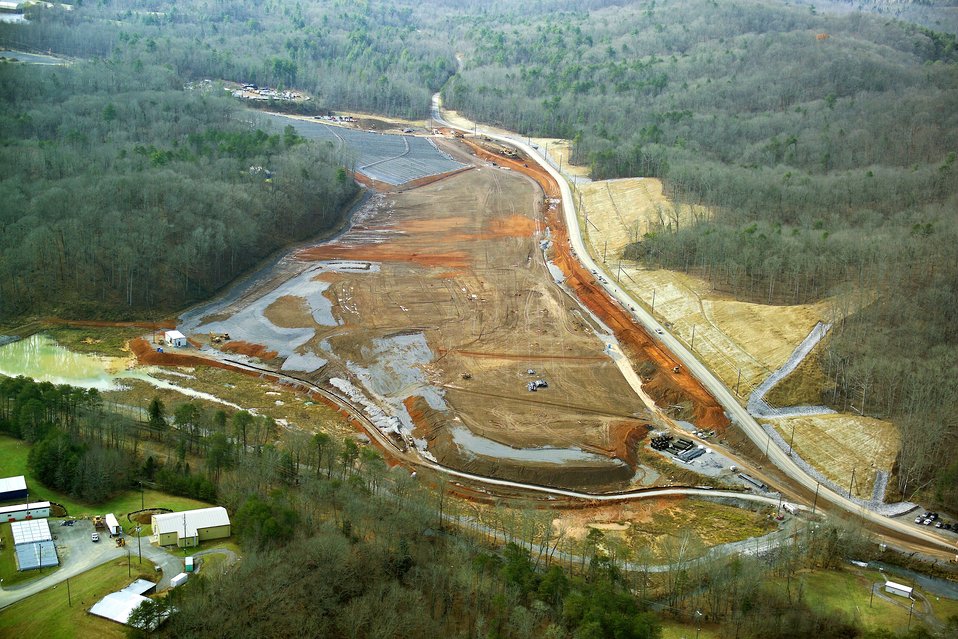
Oak Ridge Melton Valley Before